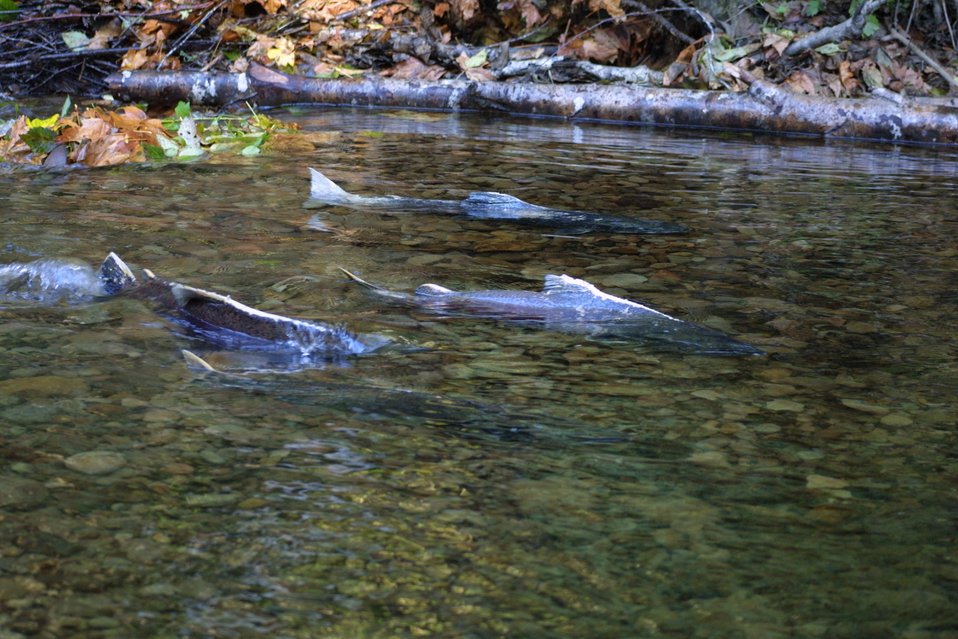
Adult Chinook Salmon spawning in Upper Tioga Creek, 11/8/01. Gravel bar created by boulder weir constructed to improve habitat.